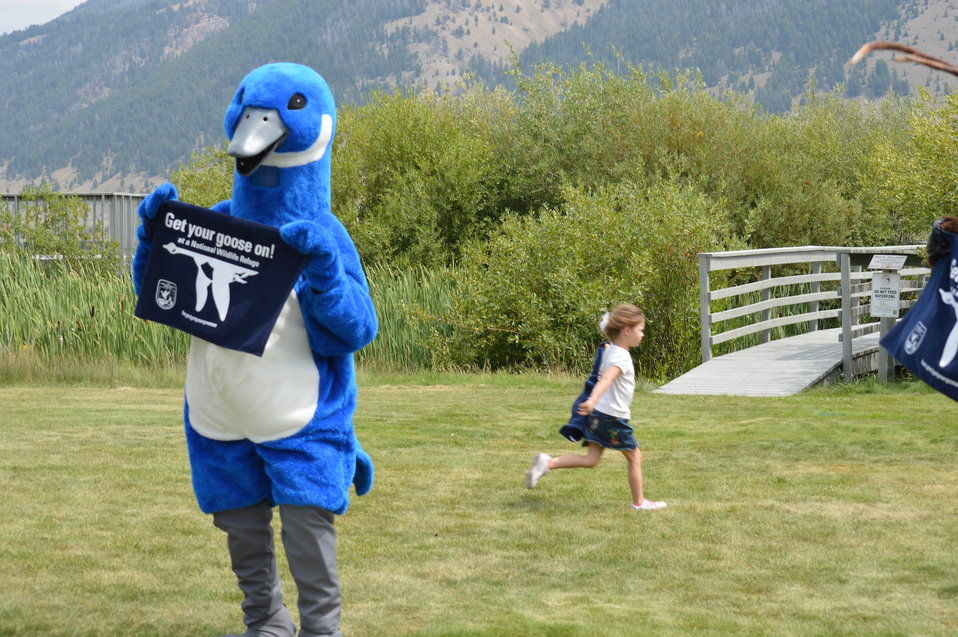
Get Your Goose On! - National Elk Refuge Style

On August 10, 2012 the U.S. Fish and Wildlife Service and Partners celebrated the 100 year anniversary of the establishment of the National Elk Refuge. In these photos, young attendees, along with Puddles the Blue Goose and the National Elk Refuge's mascot, showed us how to Get Your Goose On! with style.